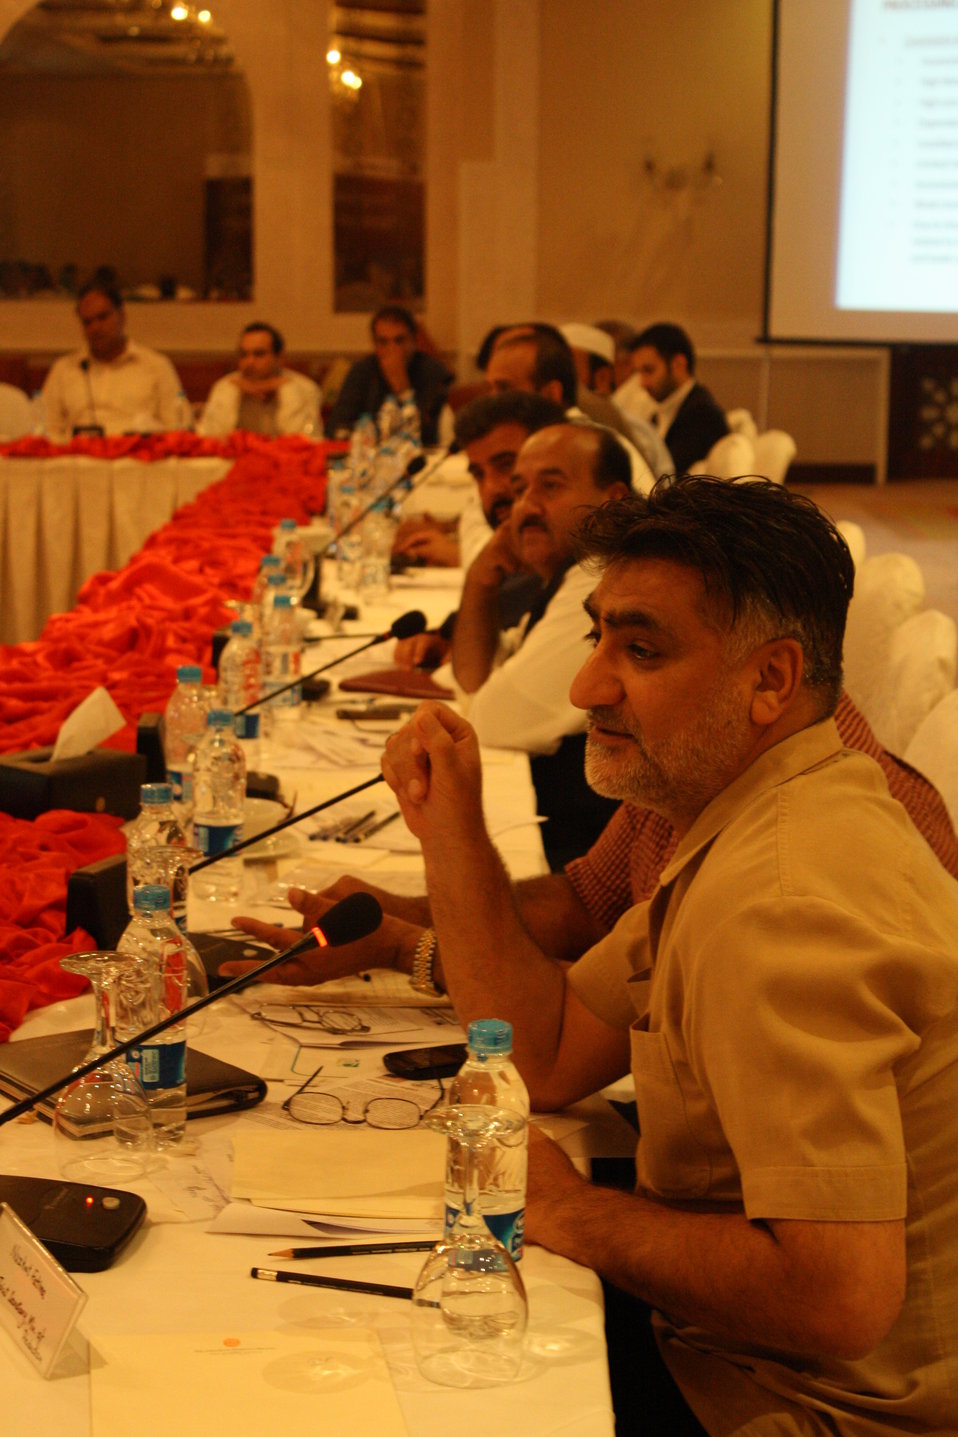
First Consultative Meeting with Marble and Granite Sector Stakeholders 2